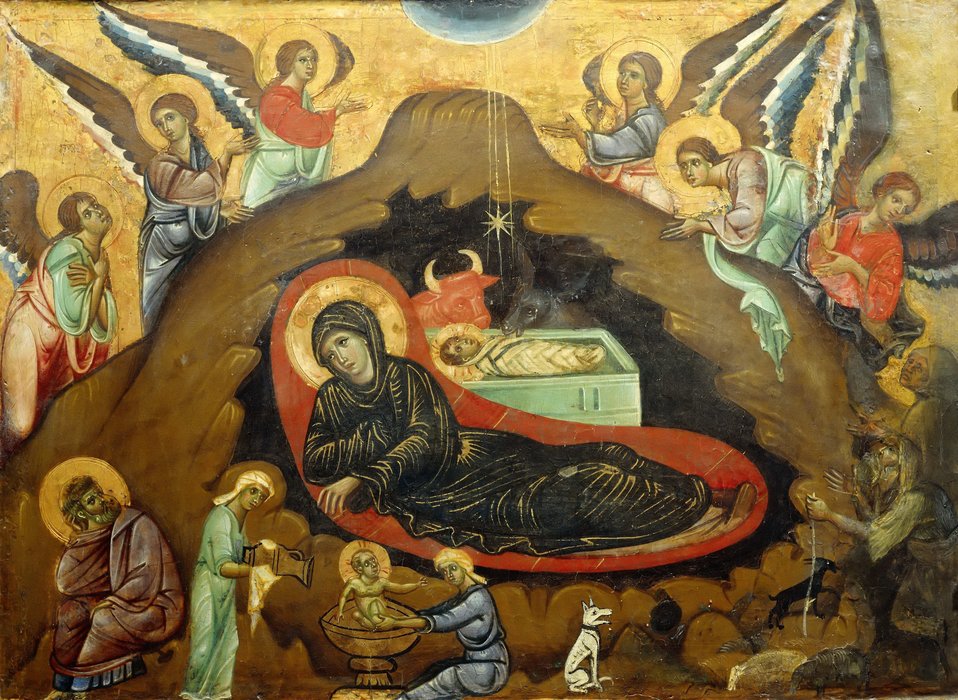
Guido Da Siena - Nativity - WGA10980